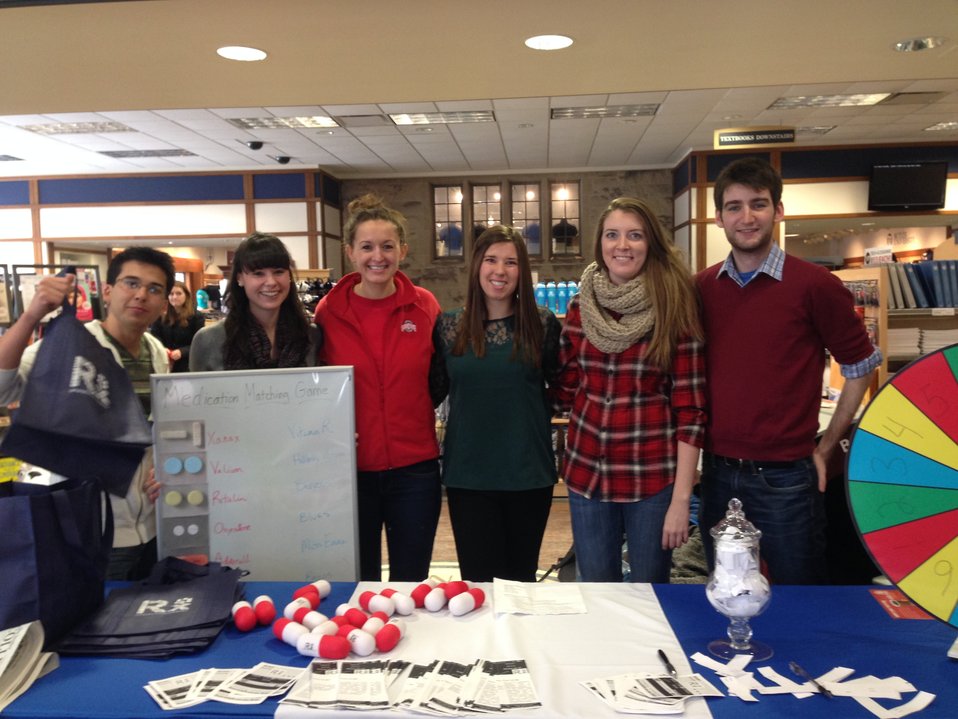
Shattering the Myths during NDFW in Indiana

Students from Butler University Generation Rx hold their 2014 NDFW Event in Indianapolis, IN.